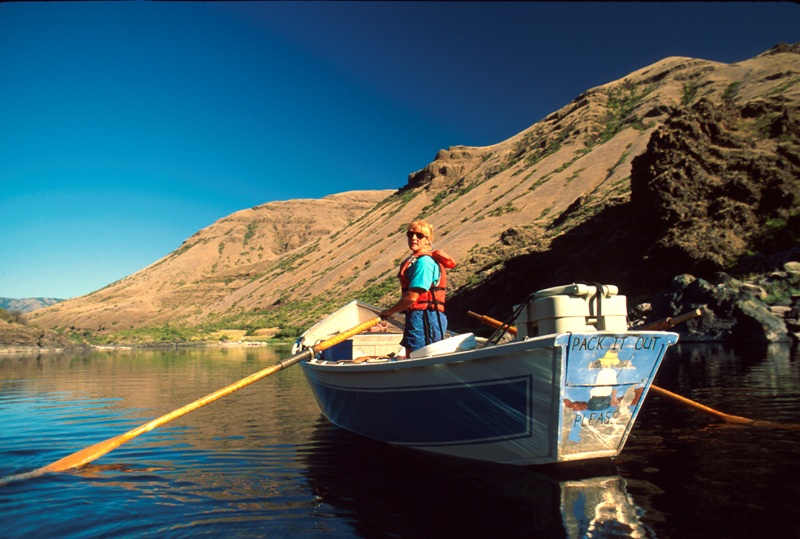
Dory Cottonwood Field Office UCSC Upper Columbia Salmon Clearwater District